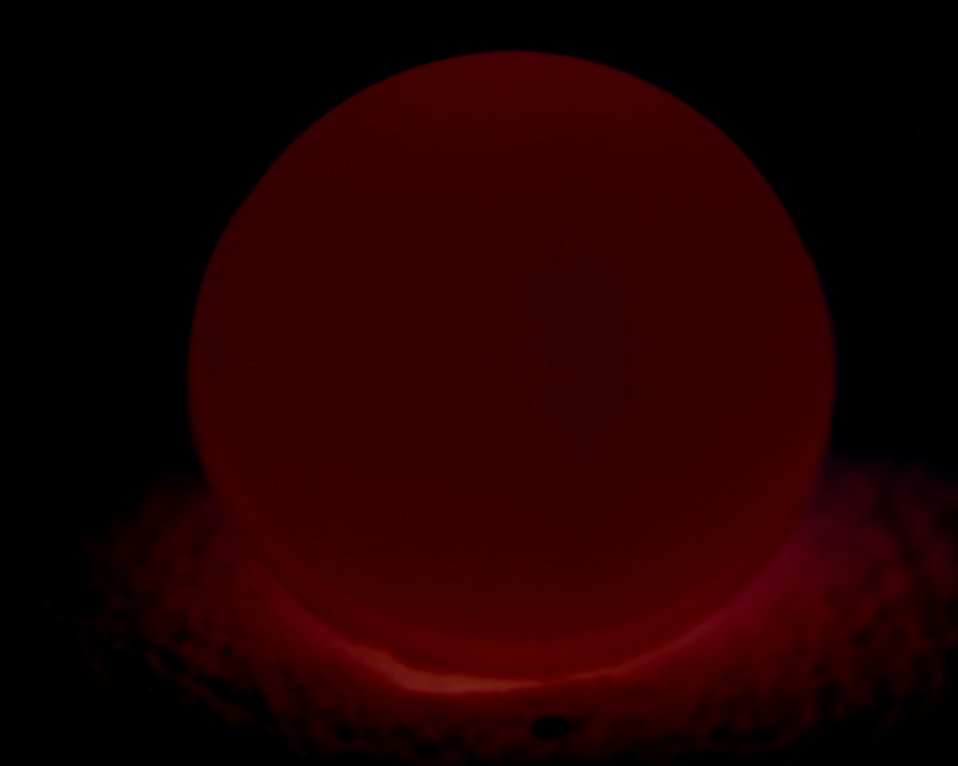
PLUTONIUM PELLET ILLUMINATED BY ITS OWN ENERGY.

THE PLUTONIUM FACILITIES AT THE TA-55 AT LANL ARE USED TO WORK ON THE TWO MAJOR ISOTOPES, PU-239 AND PU-238, OF THE MAN-MADE ELEMENT PLUTONIUM. TA-55 PROGRAMS HAVE ENCOMPASSED MANY PHASES OF PLUTONIUM RESEARCH AND DEVELOPMENT. OPERATIONS BEGAN IN APRIL, 1978.